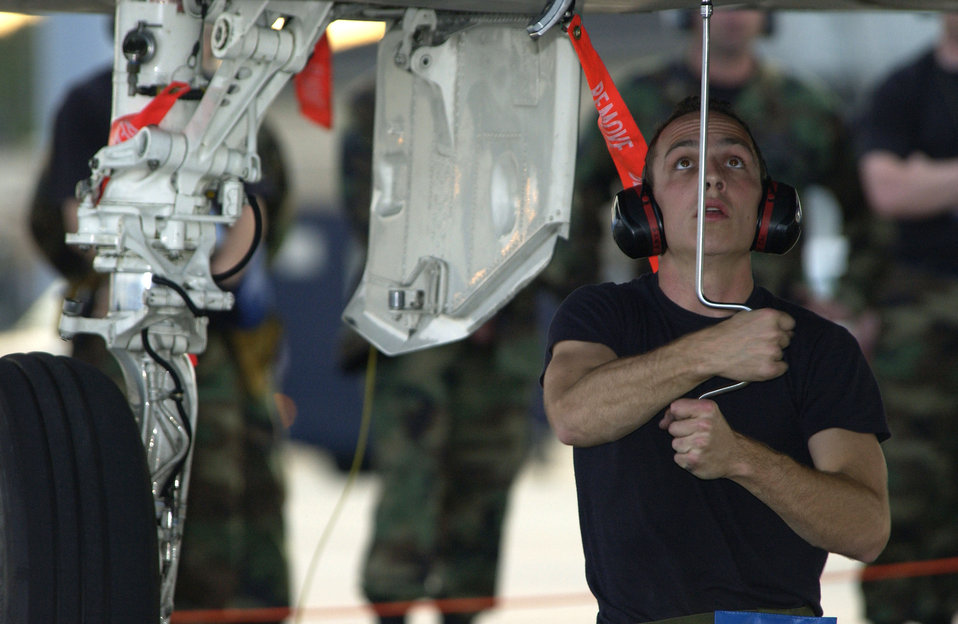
William Tell 2004

TYNDALL AIR FORCE BASE, Fla. -- Senior Airman Josh P. Pousson, prepares an F-15 Eagle for the live ammunition load competition during William Tell 2004 here Nov. 10. William Tell, which tests an aircrew's ability to perform under combat conditions, is a two week competition which challenges pilots, weapons loaders and maintainers from five F-15 fighter wings. Airman Pousson is assigned to the Oregon National Guard's 142nd Aircraft Maintenance Squadron.